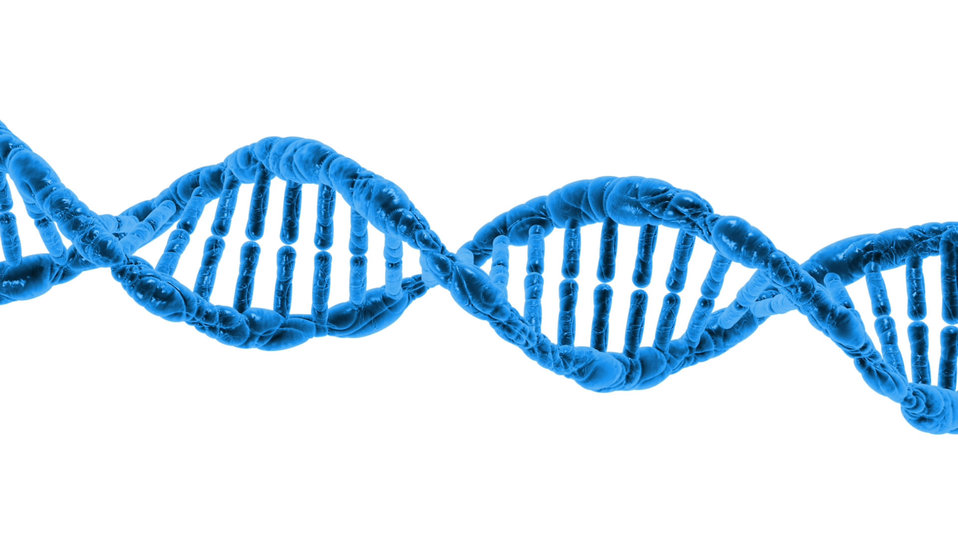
Dna strands.